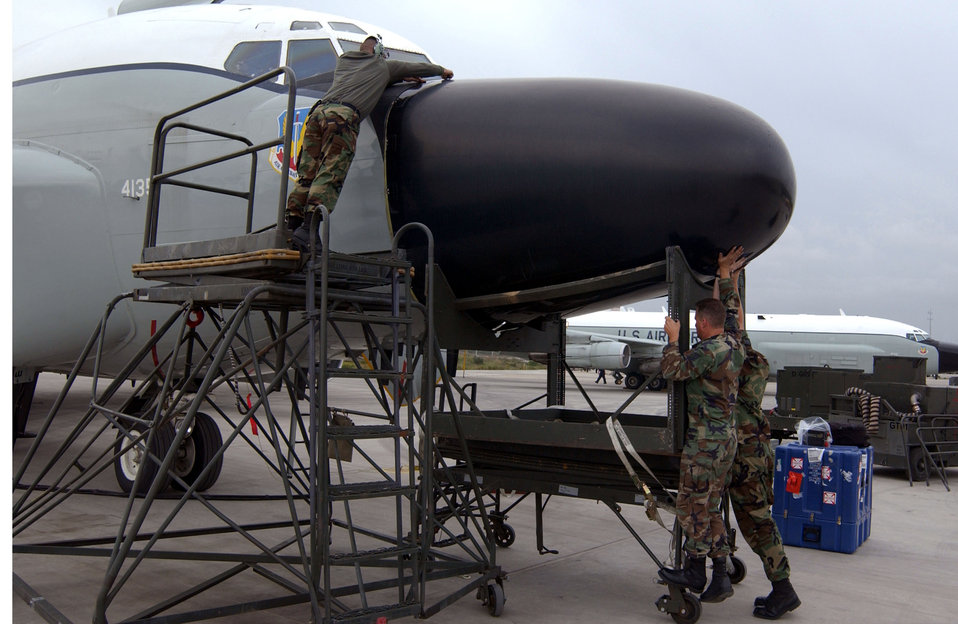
Nose job

OPERATION IRAQI FREEDOM -- Staff Sgt. Chad Young, Tech Sgt. Richard Maranea and Tech Sgt Robert Jones, assigned to the 398th Air Expeditionary Group, reattach the nose on an RC-135 (Rivet Joint), after replacing a radar, while at a forward deployed Operation Iraqi Freedom location.